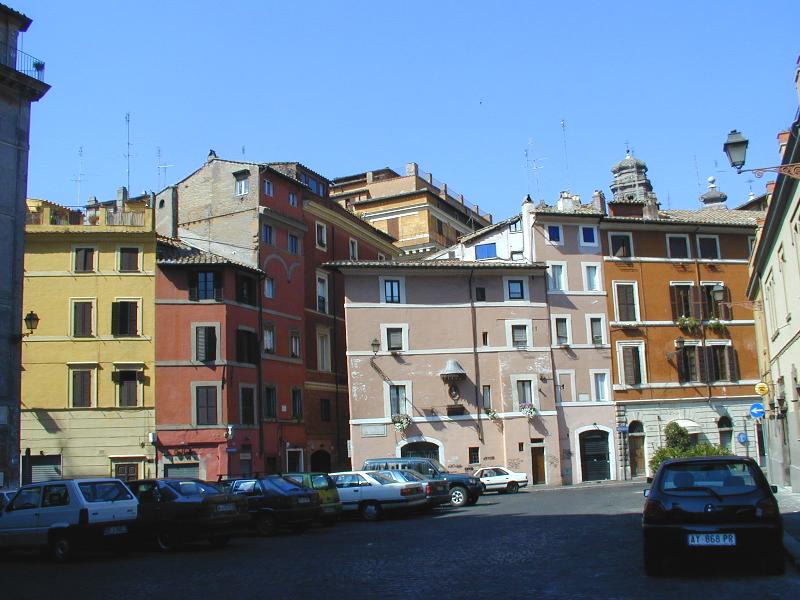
000815 5 v panico